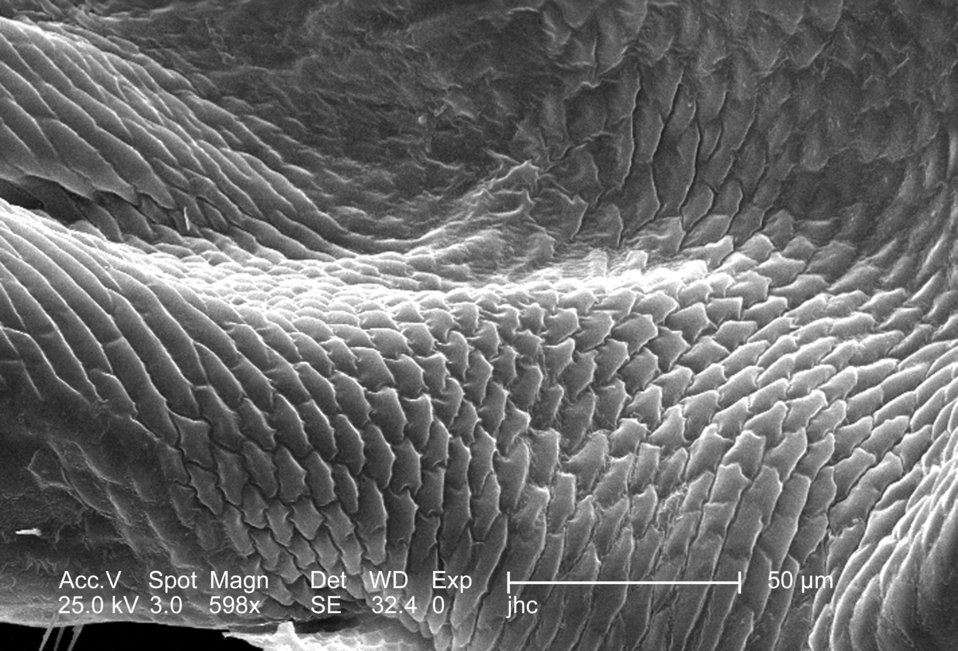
Magnified 598x, this 2006 scanning electron micrograph (SEM) depicted an enlarged view of the chitinous, exoskeletal surface of a male louse, Pediculus humanus var. corporis. In this particular view, the exoskeleton seems to be composed of interlocking plates, which is not far from the case. In this region, between two exoskeletal segments, in order to provide flexibility to this patent joint, the chitinous components were arranged in a plate-like manner, attached to one another with thin, though strong layers of exoskeletal chitin. Chitin is a molecule made up of bound units of acetylglucosamine, which is joined in such a way as to allow for increased points at which hydrogen bonding can occur. In this way chitin provides increased strength, and durability as an exoskeletal foundation.